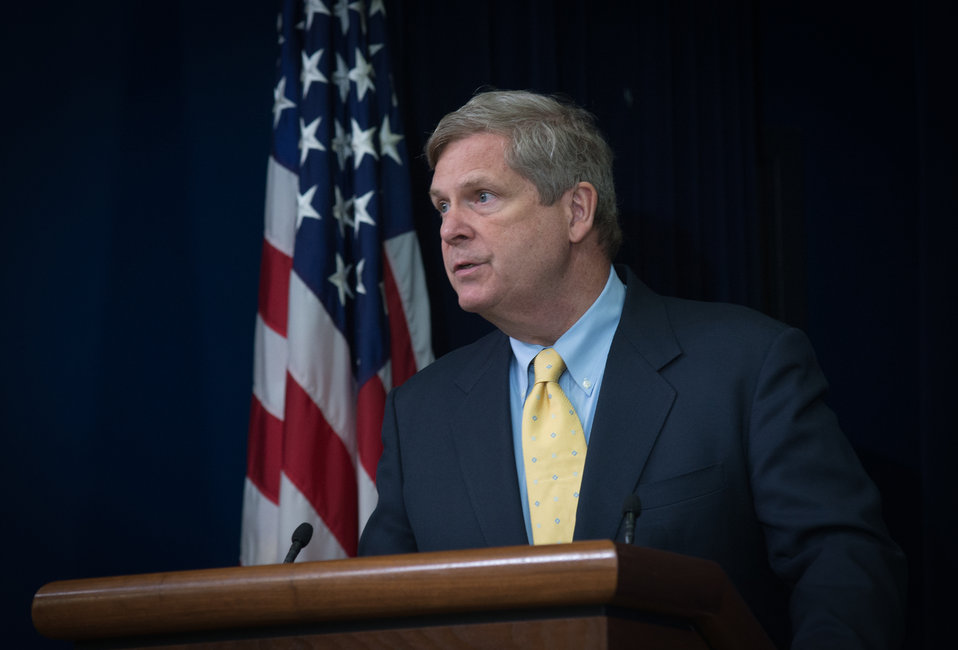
Agriculture Secretary Tom Vilsack speaks before signing a Memorandum of Understanding (MOU) with U.S. dairy leaders, during the Innovation Center For U.S. Dairy Sustainability Council Meeting on Wednesday, Apr. 24, 2013, at the White House, Washington, D.C. The objectives of the MOU are to increase the construction of anaerobic digesters and explore innovative ways to use products previously considered waste streams from dairy production, processing and handling.